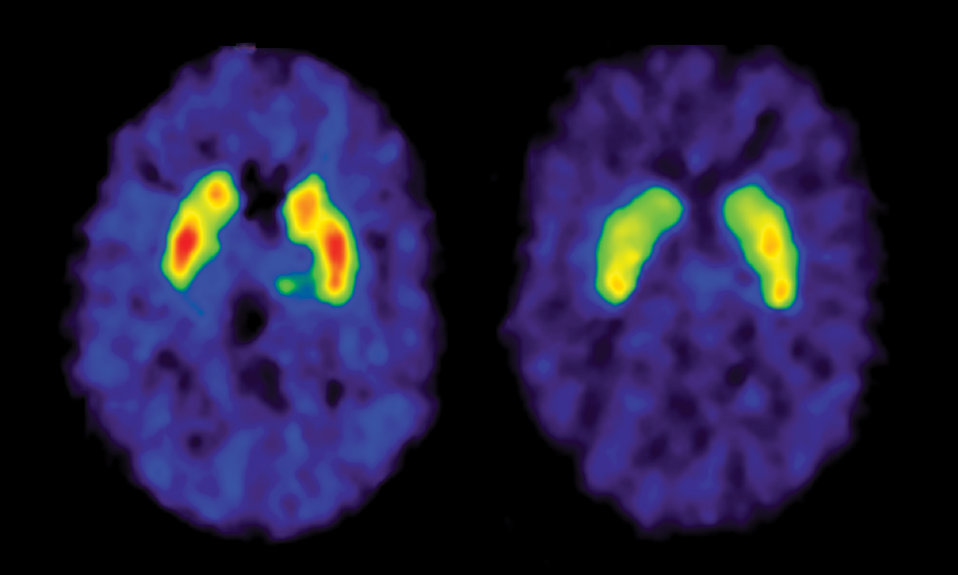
PET

Cocaine markedly reduces dopamine D2 receptor availability